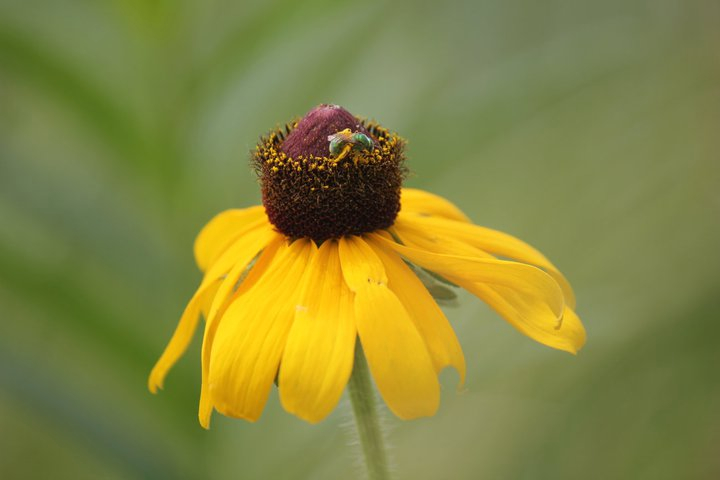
black-eyed susan

Great River and Clarence Cannon National Wildlife Refuges, MO